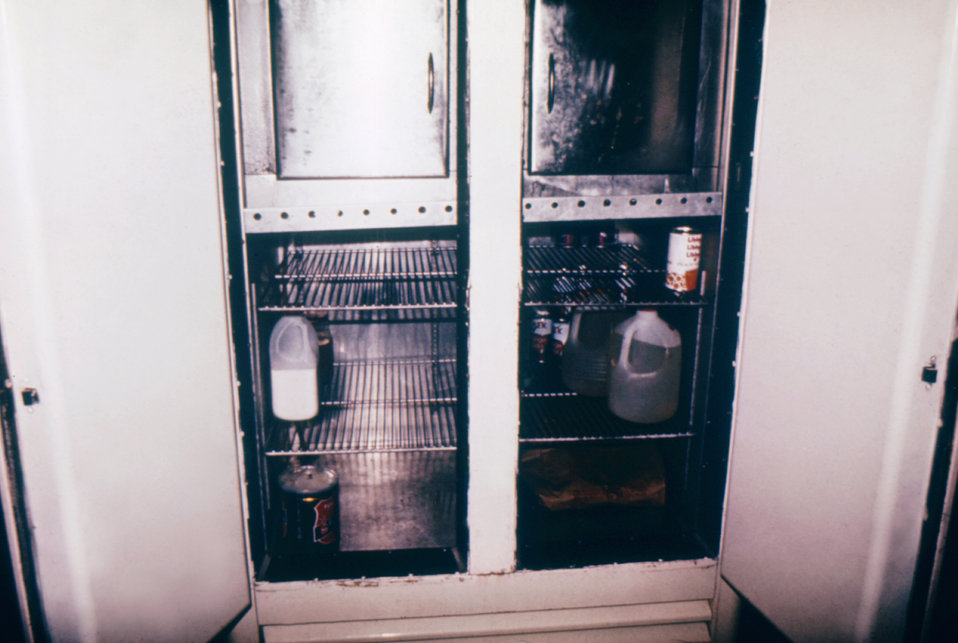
This photograph of a refrigeration unit shows a clean, sterile environment for refrigerated foods in a migrant worker camp.